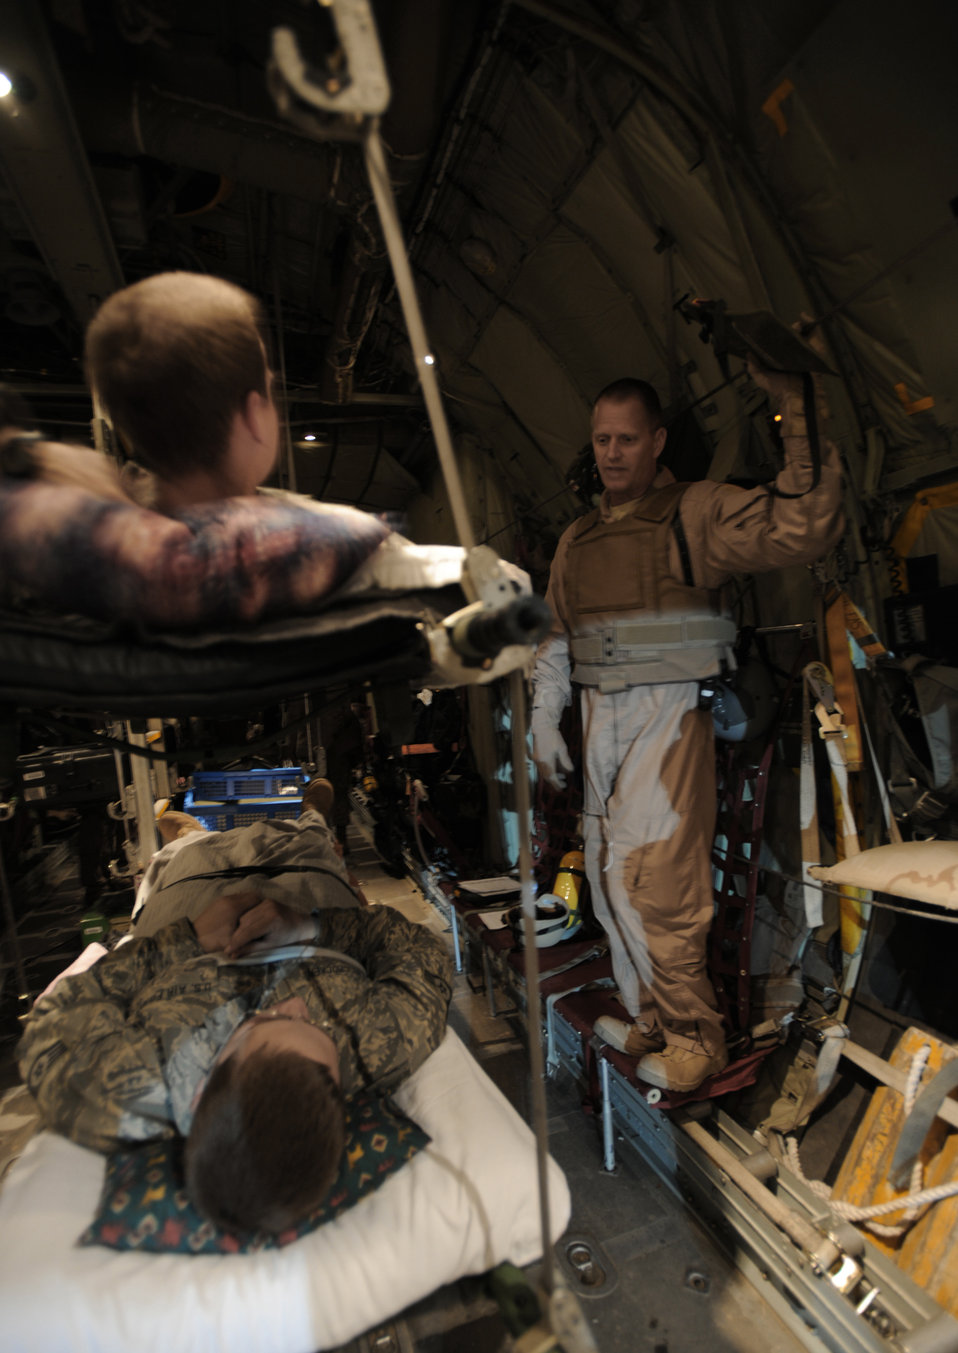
Flying medics provide theater-wide care

Maj. Scott Wilber gives a flight brief to patients aboard a C-130 Hercules during aeromedical operations April 23 over Southwest Asia. Major Wilber is a flight nurse from the 379th Expeditionary Aeromedical Evacuation Squadron.